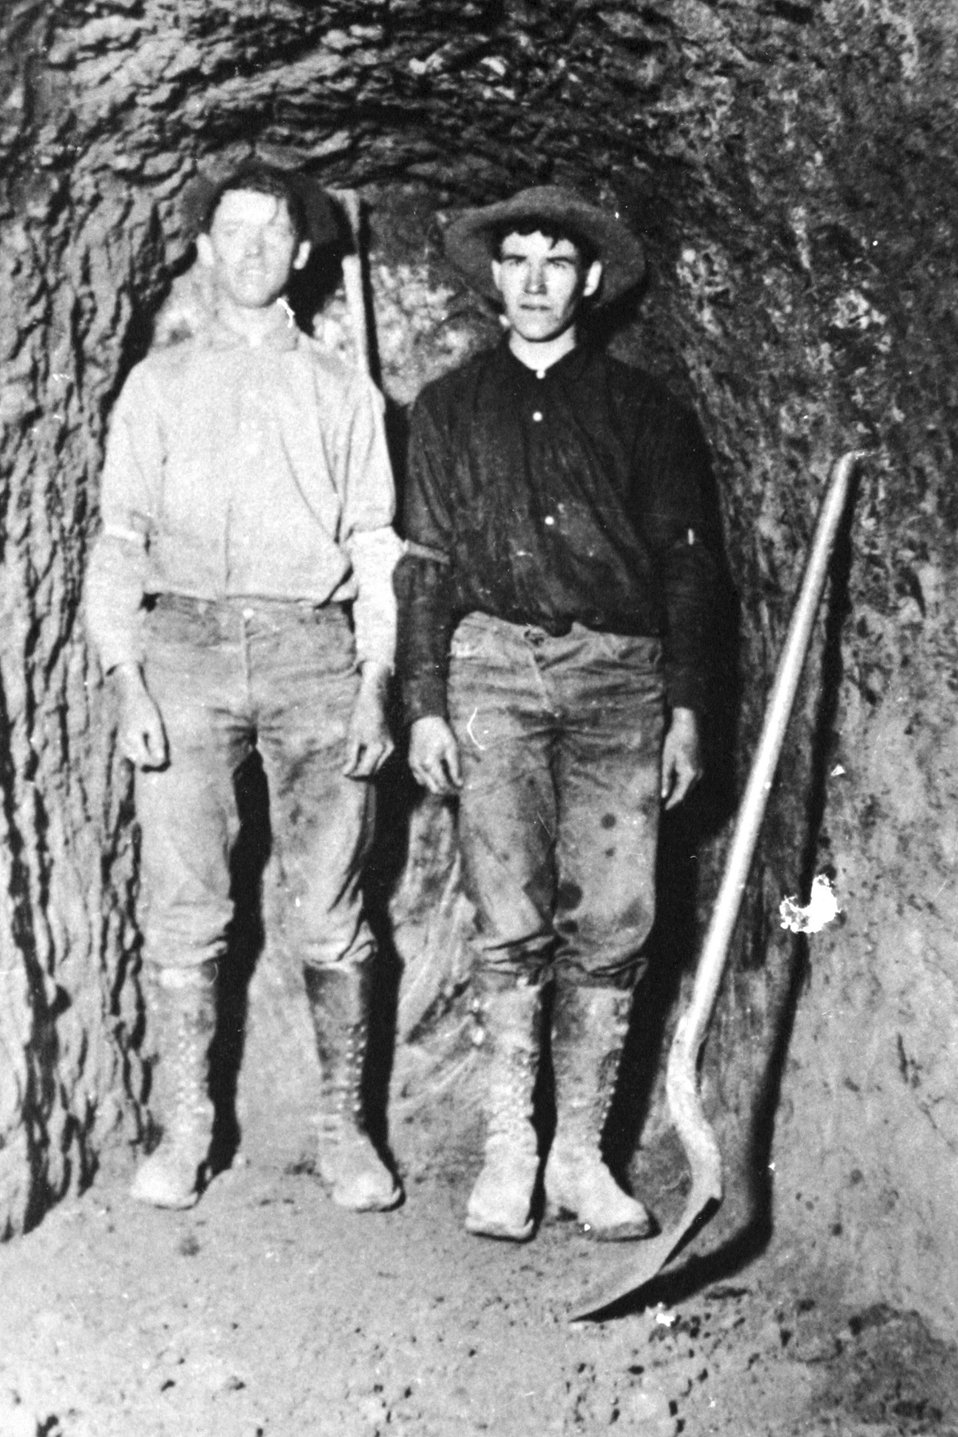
Almeda Mine